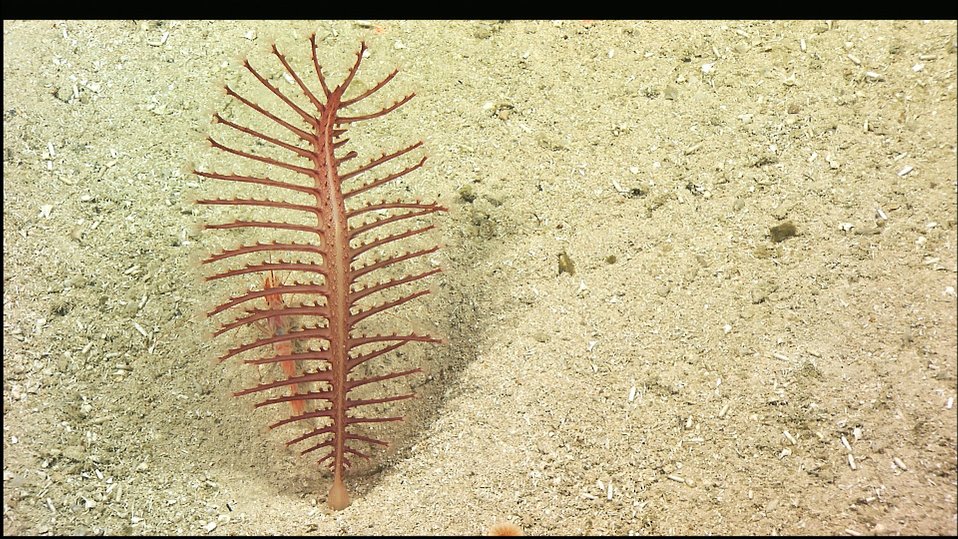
A sea pen shares a pit with a shrimp. Sea pens (Pennatulacea) are soft-bodied octocorals that anchor into sediments by inflating the base of a large polyp with water. The side branches of this large polyp hold to or more feeding polyps .